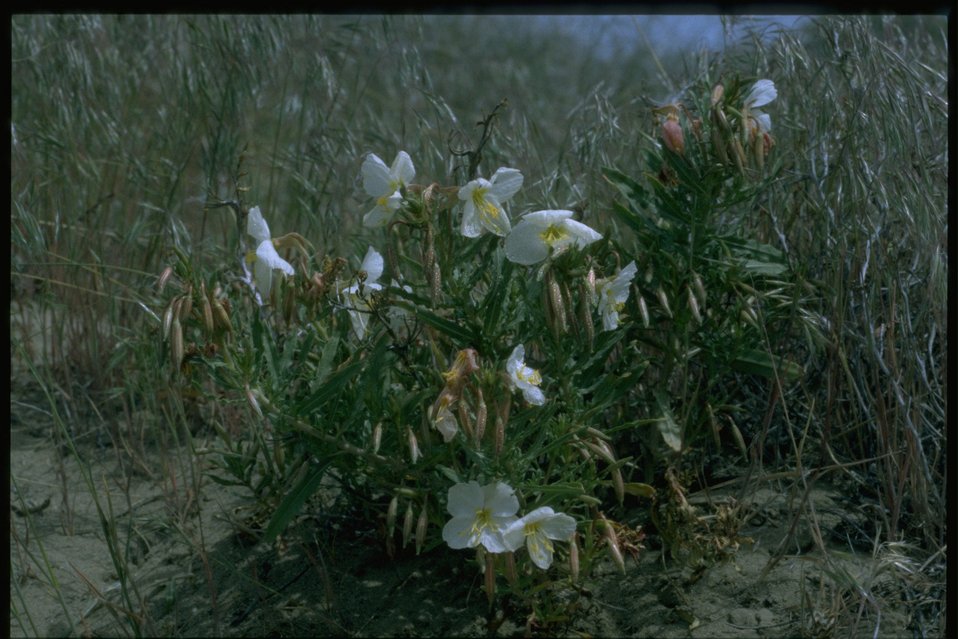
Medium shot of Sand Primrose habitat.